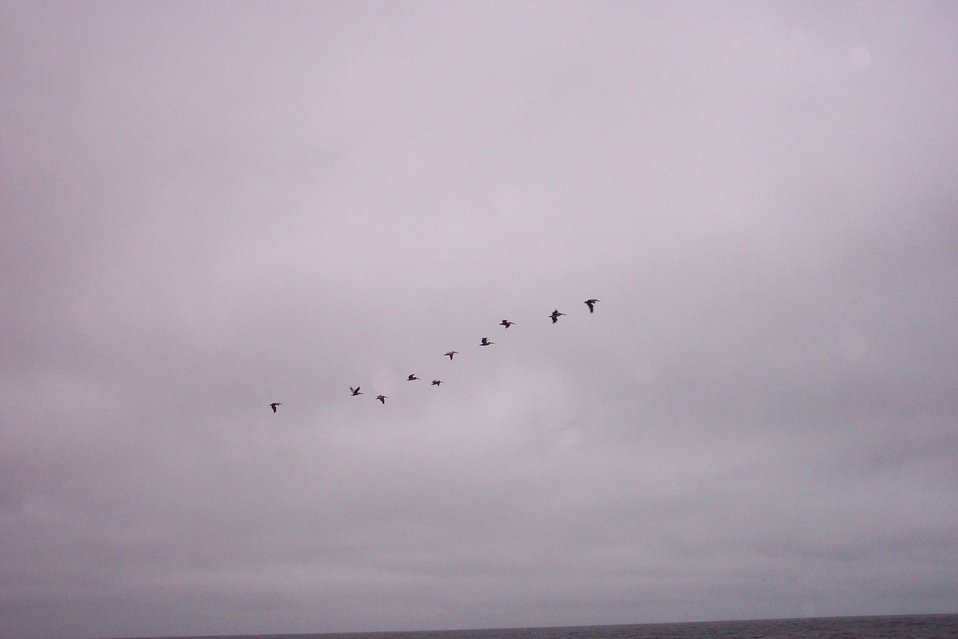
A flight of Brown Pelicans - Pelecanus occidentalis - as seen at Point Lobos.